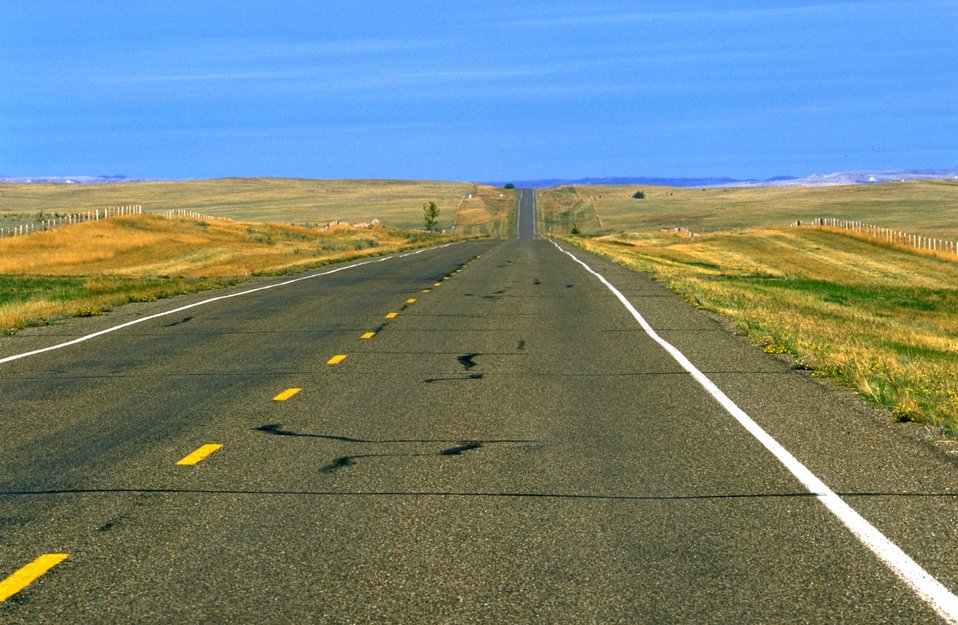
Highway through the Big Sky Back Country Byway